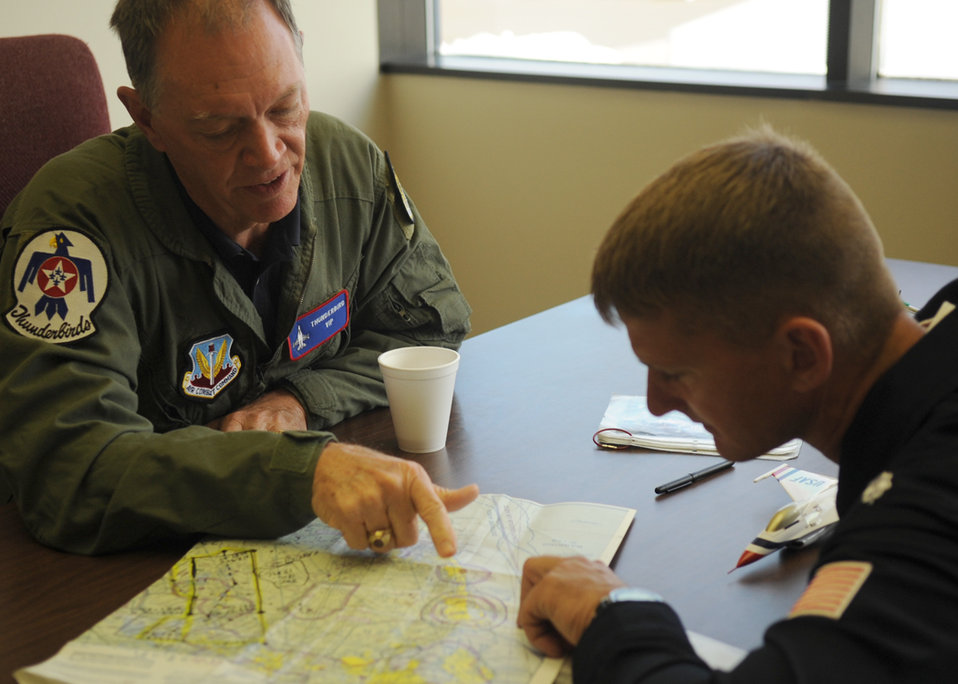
Flying with the Thunderbirds

Before his familiarization flight April 15, 2010, at Nellis Air Force Base, Nev., Randy Babbitt (left), the administrator of the Federal Aviation Administration, receives a preflight briefing from Thunderbirds No. 7 pilot Lt. Col. Derek Routt.